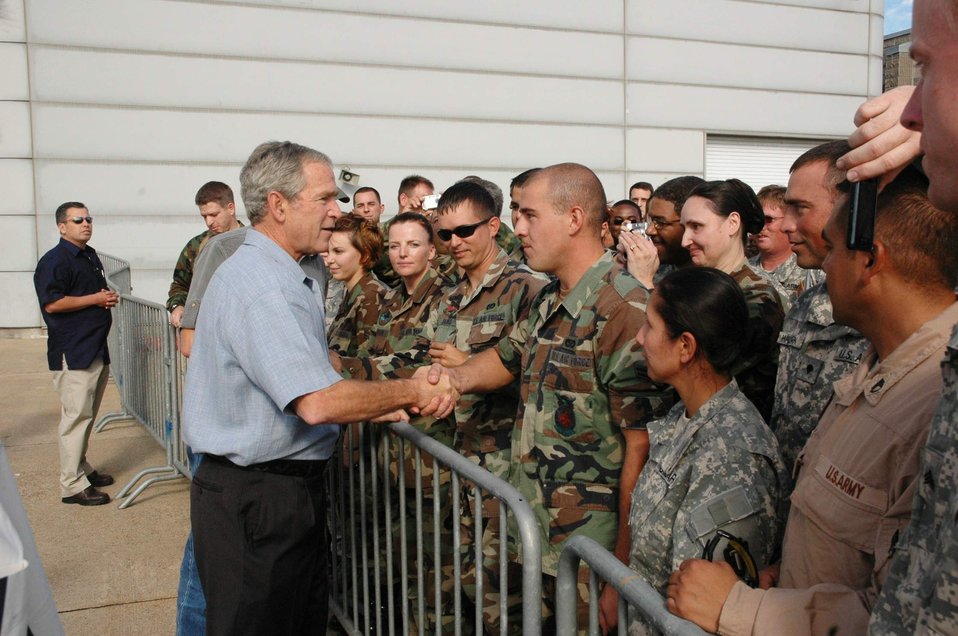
President Bush greets servicemembers supporting Ike relief

President George W. Bush shakes hands with military members Sept. 16 at Ellington Field, Texas, before assessing the damage from Hurricane Ike from the Marine 1 helicopter around the Gulf Coast. Active duty, Reserve and Guard servicemembers are assisting with the relief effort after the storm ravaged the region.